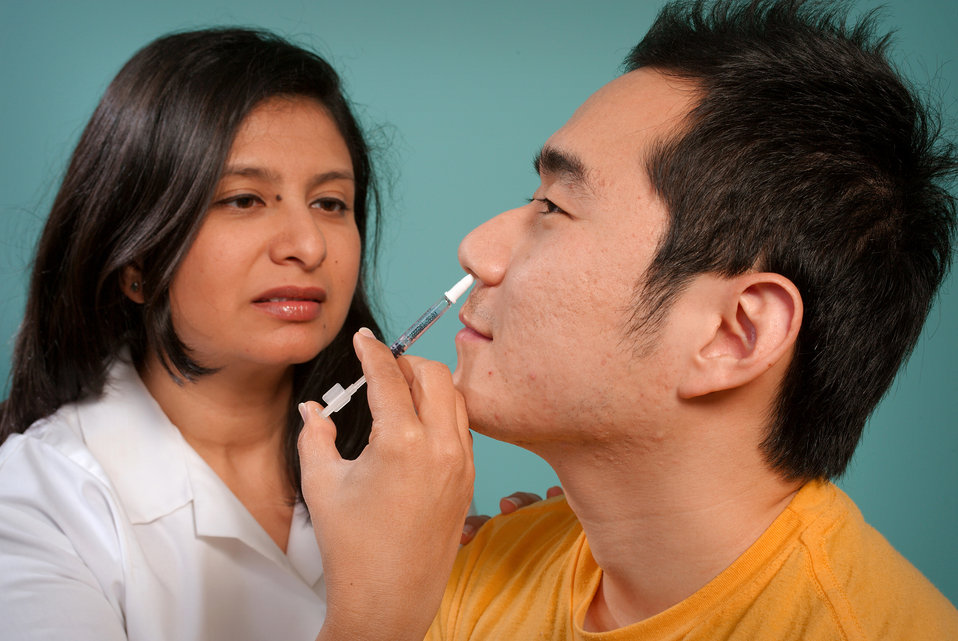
This 2009 image depicts a healthcare practitioner as she was administering the H1N1 live attenuated intranasal vaccine (LAIV) to an Asian man. Using a small syringe, she was delivering the vaccine mist into the man's left nostril.